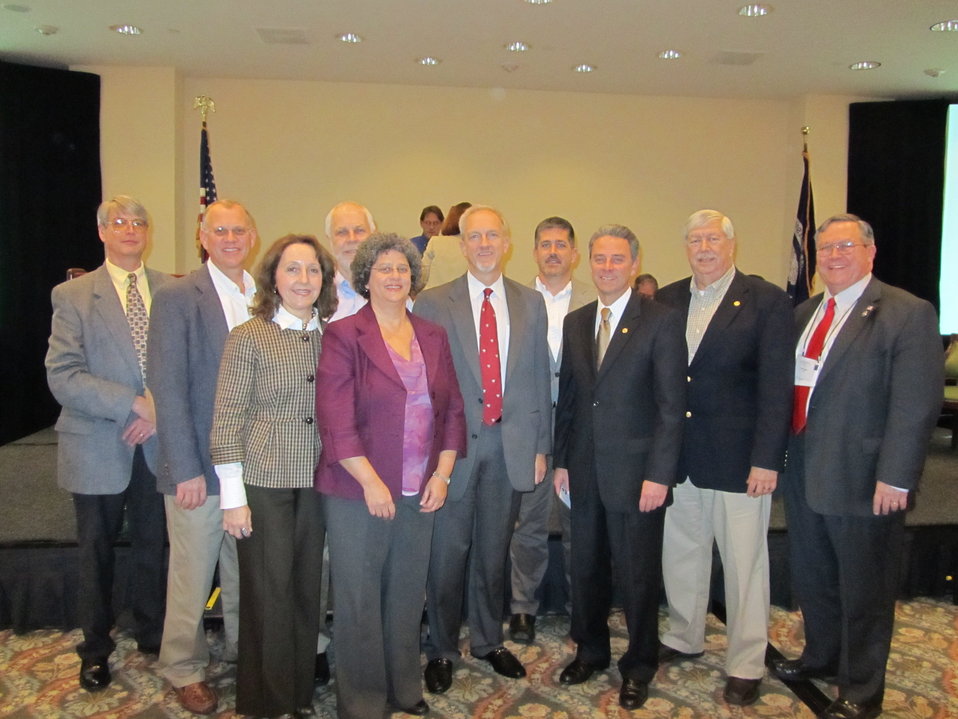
10th Intergovernmental Meeting

The 10th Intergovernmental Meeting in New Orleans in December 2011 was attended by state, local, and Tribal regulators and stakeholders and DOE officials.